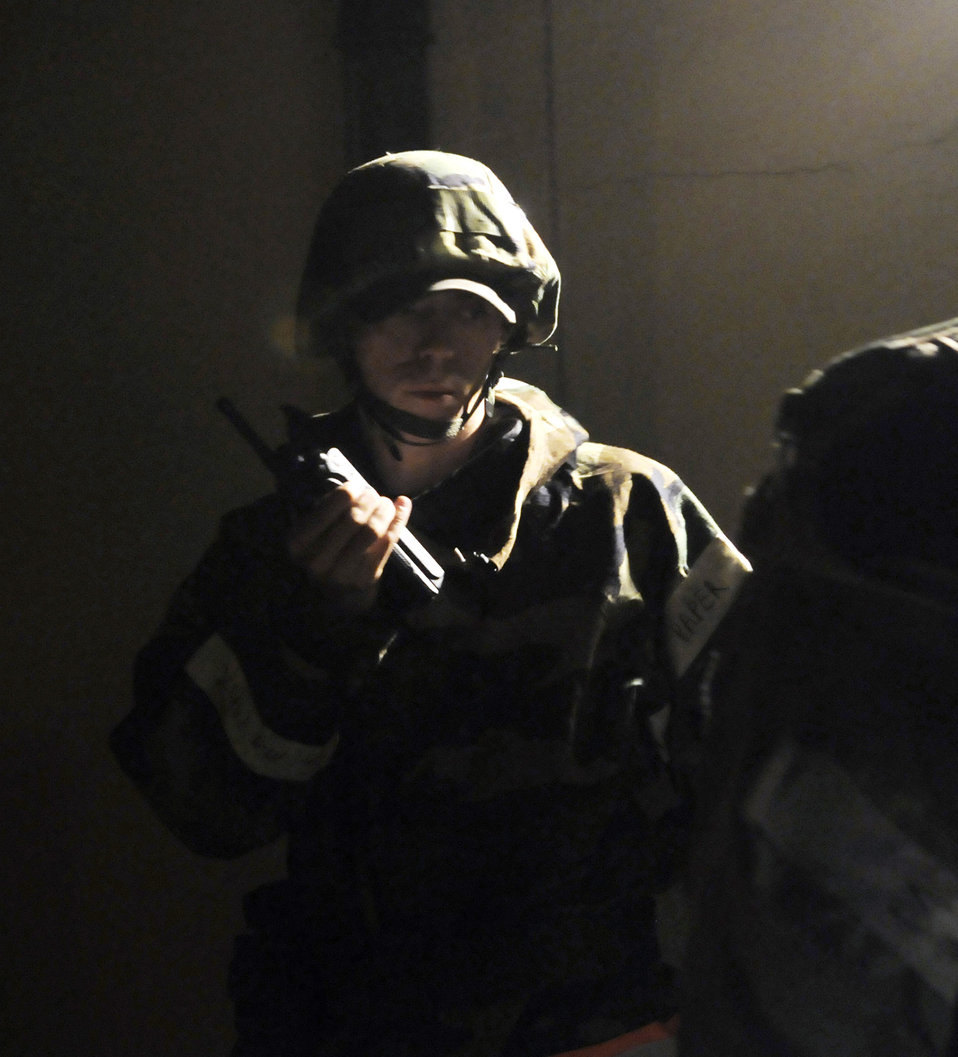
Working the night shift

Senior Airman Christopher Sherfinski radios his chain of command about the status of a door alarm he is repairing during a phase-two exercise July 21 at Royal Air Force Mildenhall, England. Airman Sherfinski is assigned to the 100th Civil Engineer Squadron.